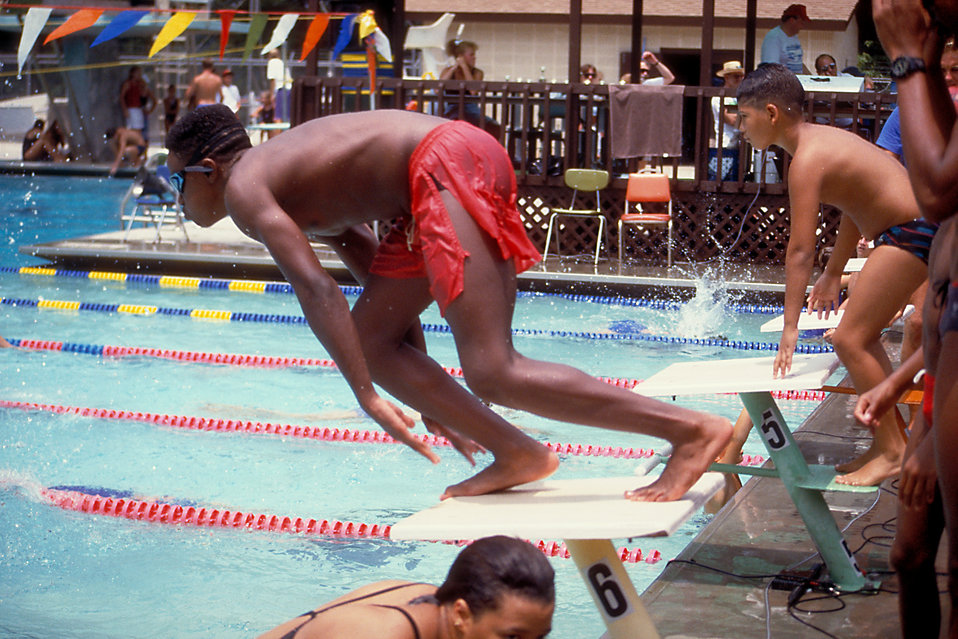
This boy was diving into a swimming pool, while exercising during his swim.